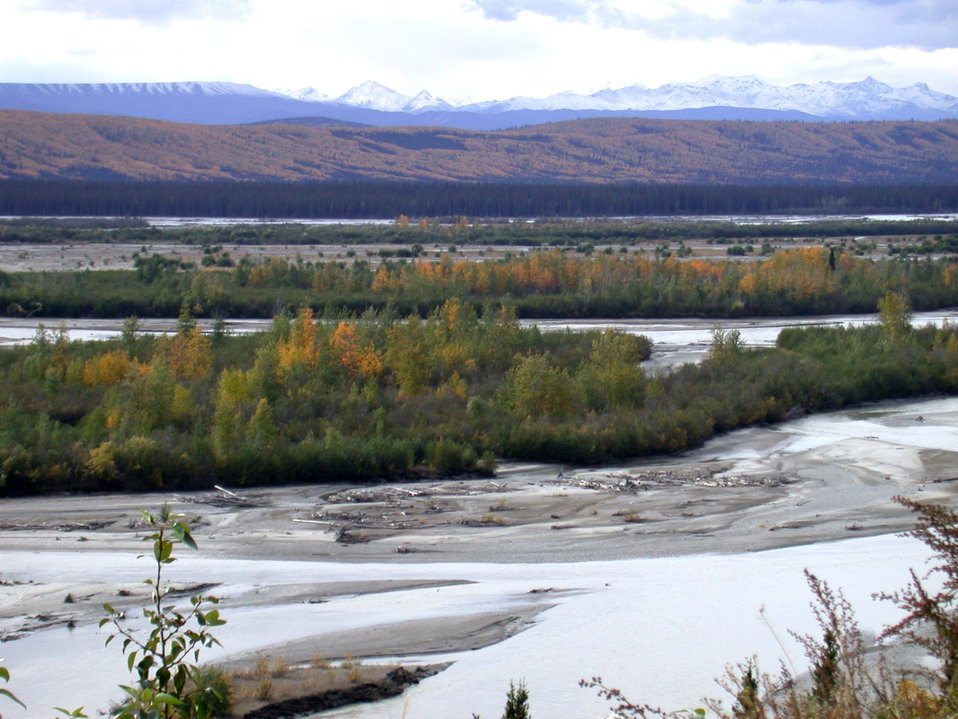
Looking across Susitna River to the high mountains of the Alaska Range north of Anchorage.